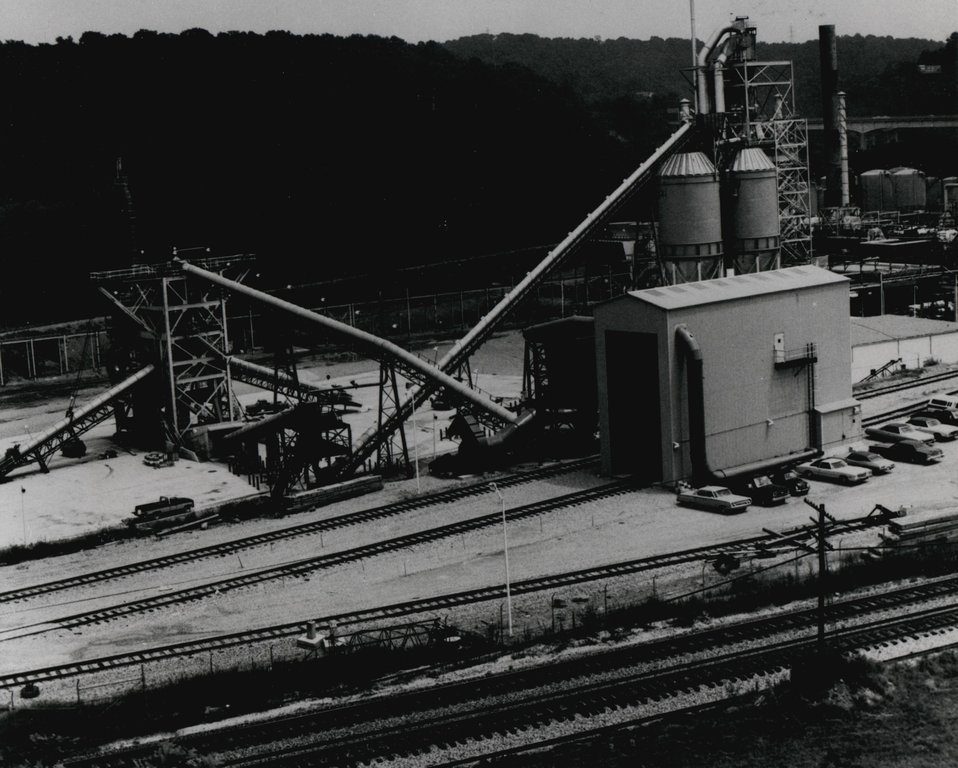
An overall view of H-Coal Pilot Plant coal receiving, stockpile, crusher, and pulveriser coal storage bins area at Catlettsburg, Kentucky. Circa 1980.